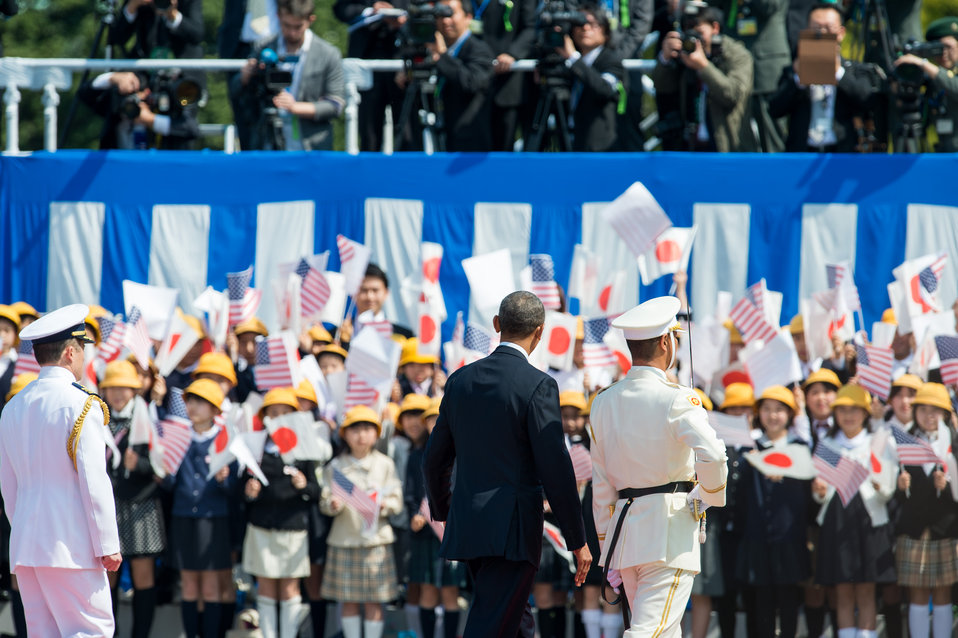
President Obama at the Welcome Ceremony in Japan

U.S. President Barack Obama is greeted by children during the welcome ceremony at the Imperial Palace in Tokyo, Japan, on April 24, 2014.